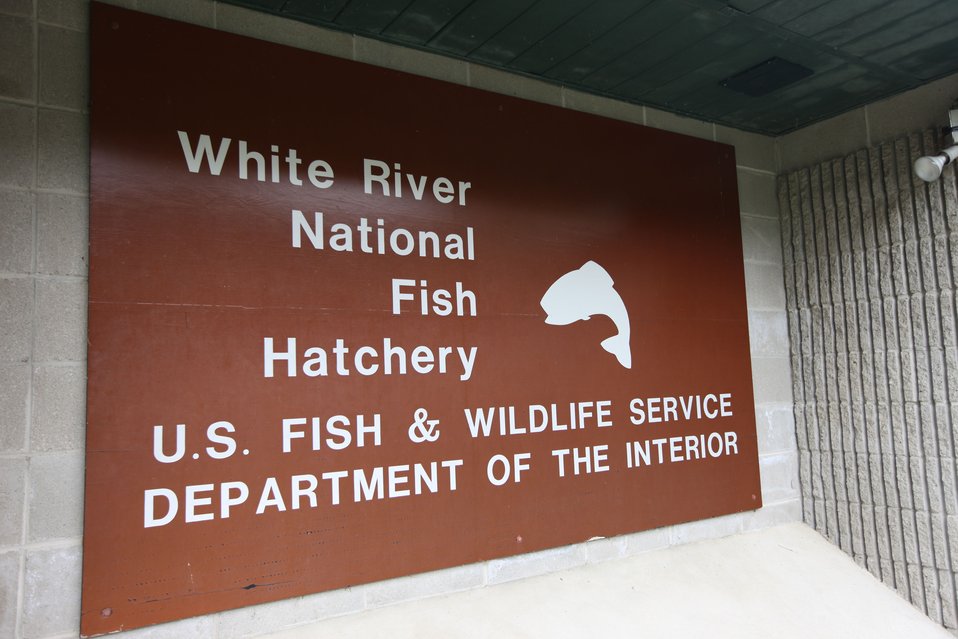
Hatchery Sign

U.S. Fish & Wildlife Service Director Dan Ashe visits the Northeast Region
for a tour of the White River National Fish Hatchery in Bethel, Vermont on
April 27, 2012. The hatchery was devastated by Tropical Storm Irene and
Dan Ashe had the chance to meet and thank the staff for their heroic work.
Director Ashe also visited restoration/flood response/fish passage project
sites in Rochester, Vermont and met with local officials and staff from the
White River Partnership.